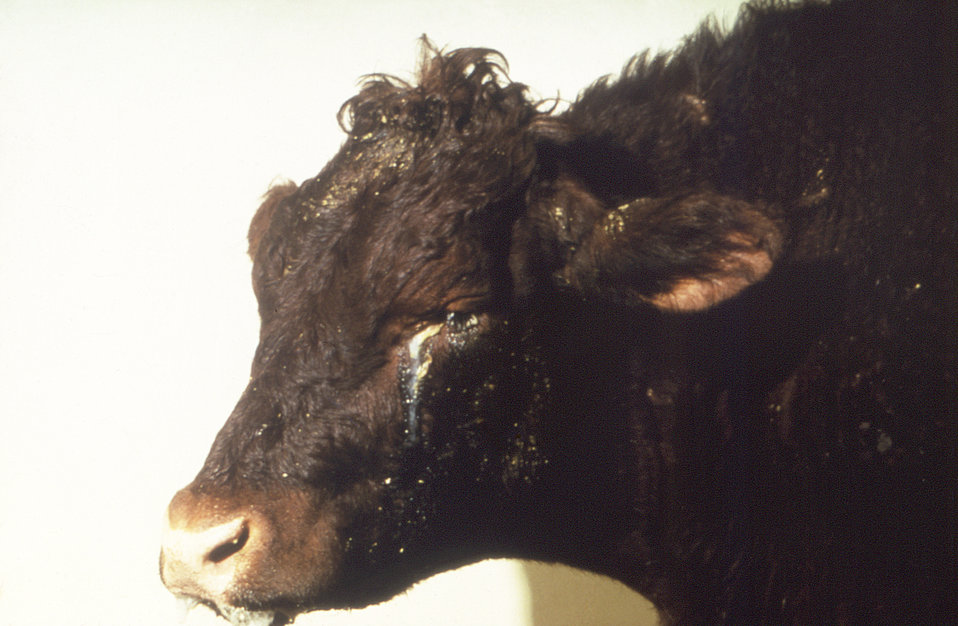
This image depicts the left side of a cow's head, which is exhibiting symptoms of an illness diagnosed as Rinderpest virus, also known as cattle plague or steppe murrain. Note the lethargic appearance of this animal, as well as the ophthalmic discharge emanating from the cow's left eye, which is one of the symptoms of this disease. Other symptoms include fever, loss of appetite, nasal, oral, and urogenital erosions, constipation followed by diarrhea, and death 6 to 12 days after onset of illness.